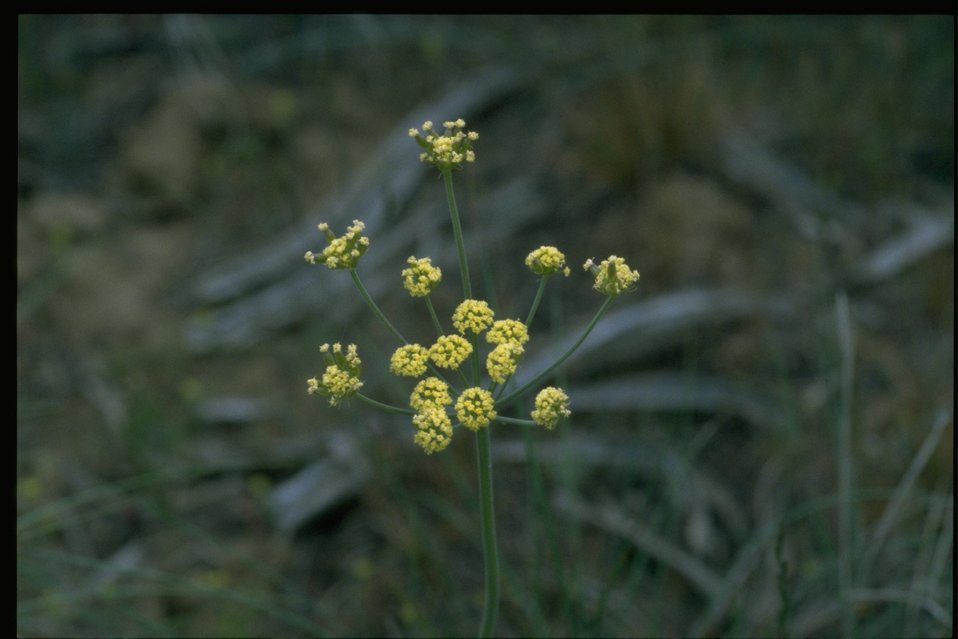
Medium shot of Sweet Fennel (Foeniculum vulgare).